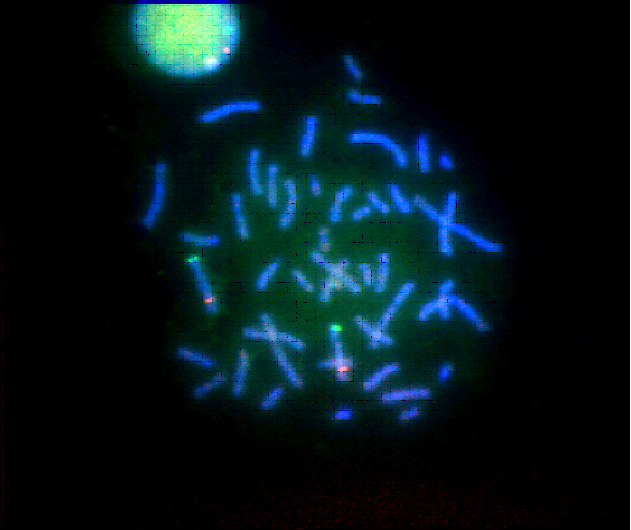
Chromosome 5

Chromosomes tagged with red and green fluorescent probes on chromosome 5. By chemically treating chromosomes extracted from a patient's blood sample and looking for breaks in chromosome 5, researchers hope to be able to predict a person's susceptibility to lung cancer.